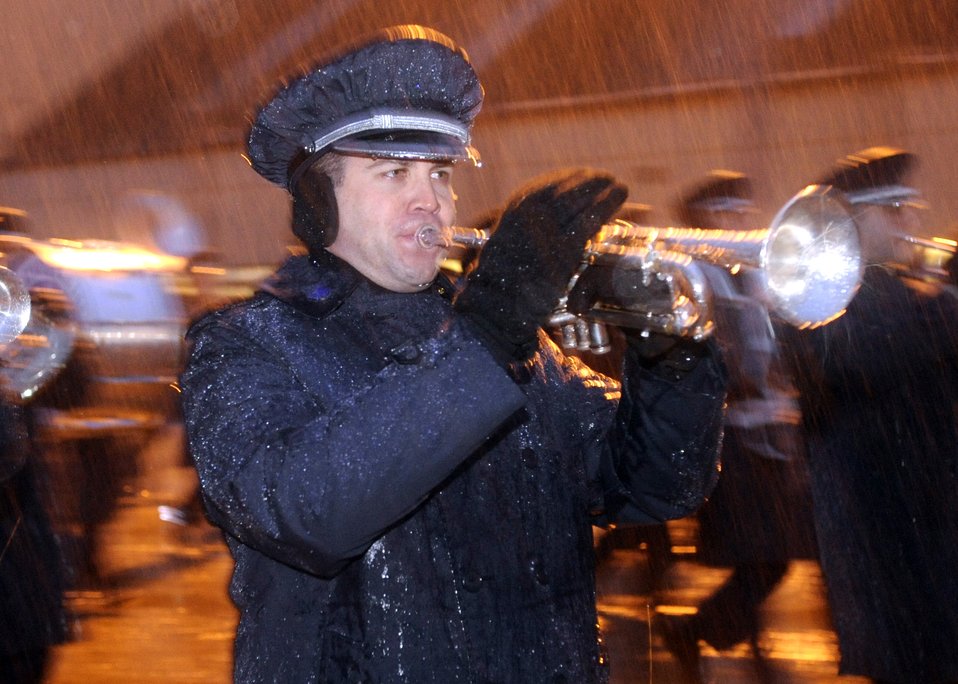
Air Force Band prepares for inauguration day

Tech. Sgt. Joe Reynalds practices songs while marching in the morning rain Jan. 7 at Andrews Air Force Base, Md., in preparation for the inauguration of President-elect Barack Obama.